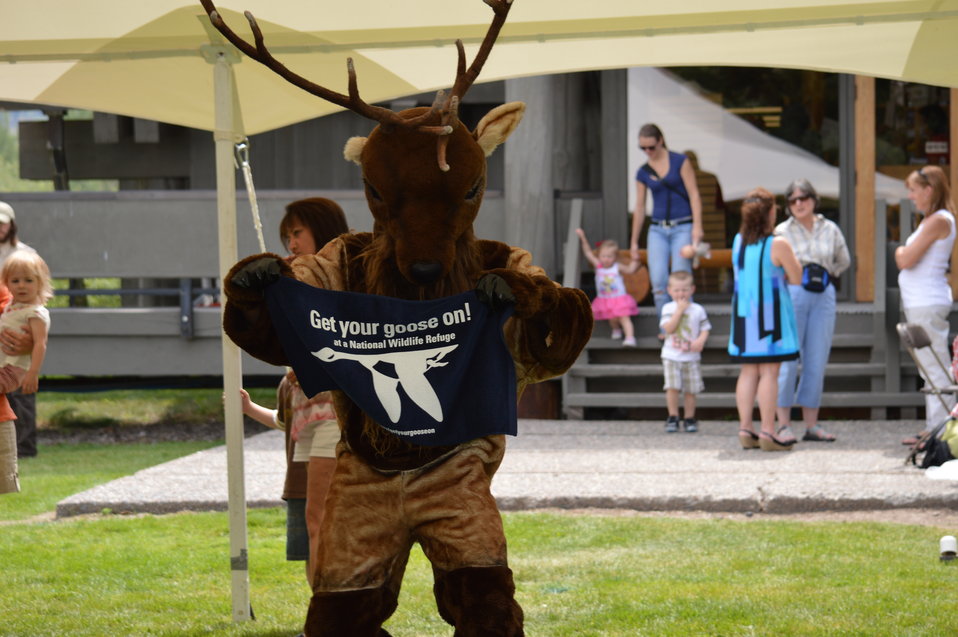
Get Your Goose On! - National Elk Refuge Style

On August 10, 2012 the U.S. Fish and Wildlife Service and Partners celebrated the 100 year anniversary of the establishment of the National Elk Refuge. In these photos, young attendees, along with Puddles the Blue Goose and the National Elk Refuge's mascot, showed us how to Get Your Goose On! with style.